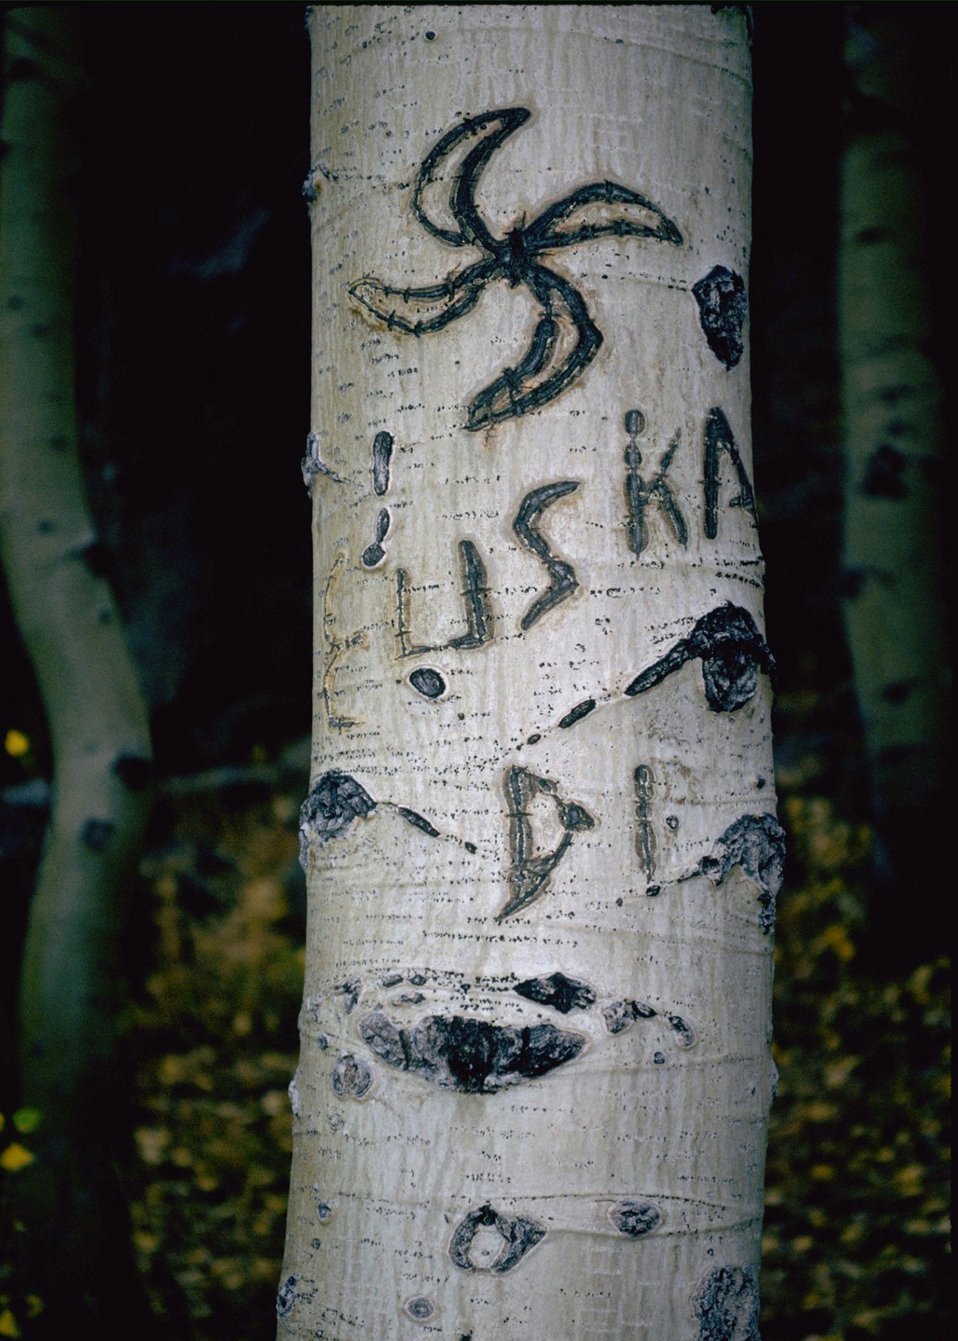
Basque Shepherd dendroglyphs (circa 1930's) in the Steens Mountain Area, Southeast Oregon.